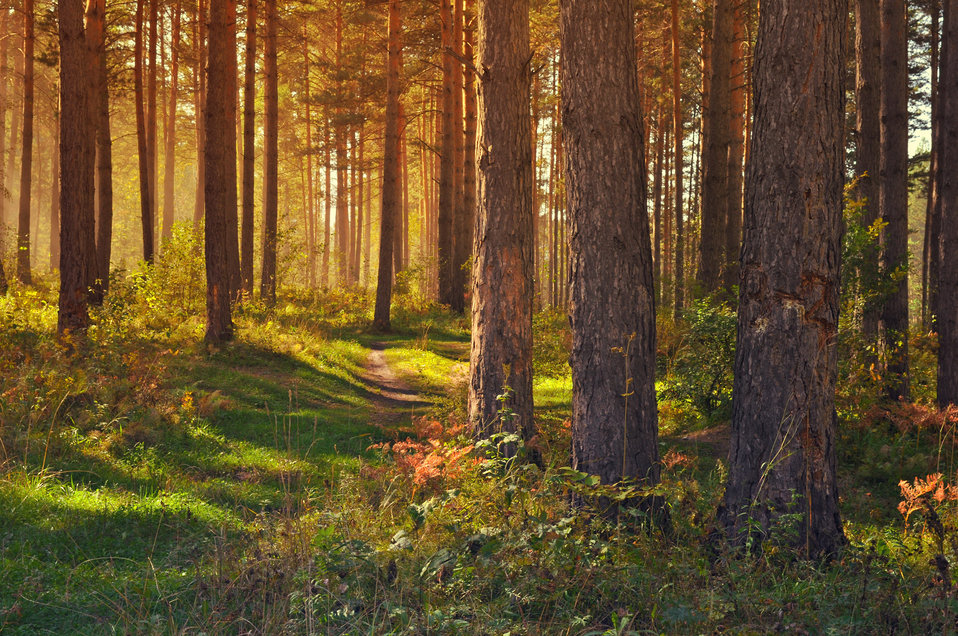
September in the forest

View of a forest in autumn.